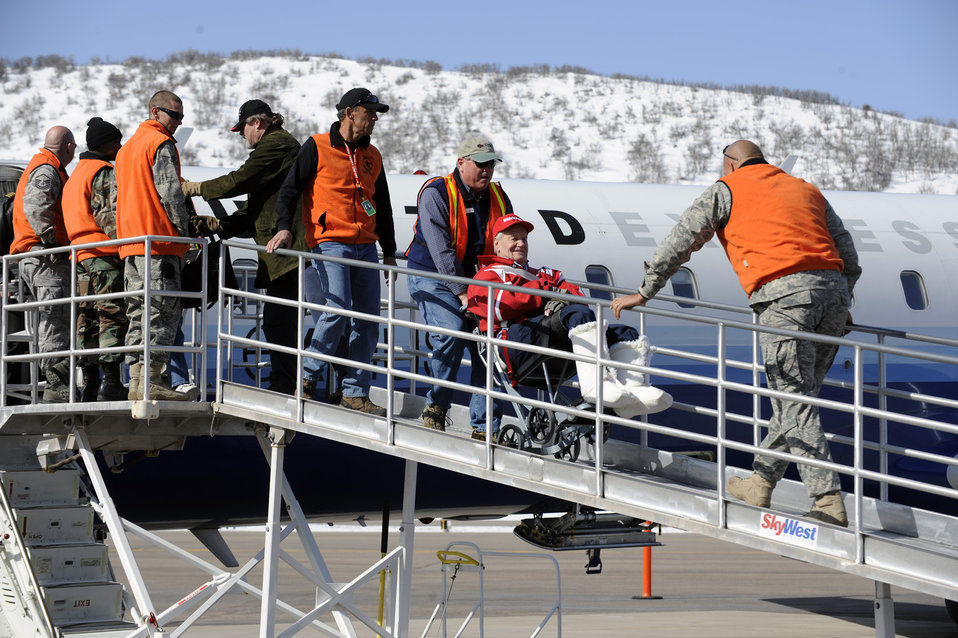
Winter rehabilitation clinic shows veterans potential

Steve Slater escorts Russell Worth off an United Aircraft March 28 at the Aspen Airport, Colo. Mr. Slater is a ski instructor for the Disabled American Veterans Winter Sports Clinic, and Mr. Fleuker is from Watertown, Wisc. This is Worth's 16th year attending the Disabled American Veterans Winter Sports Clinic.